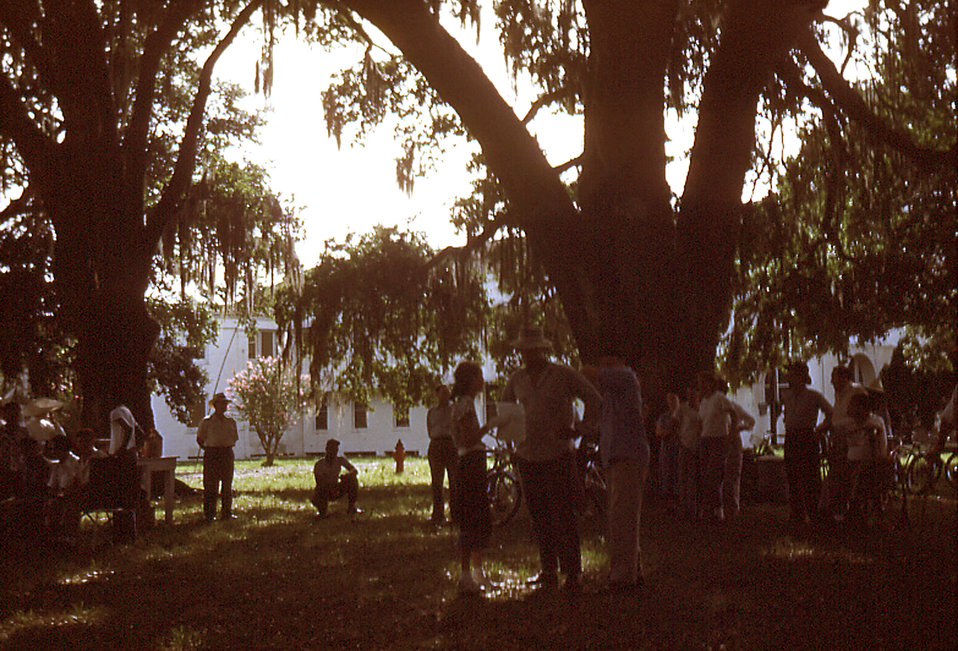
This historic image depicted a gathering of Carville, Louisiana Leprosarium patients, as they were enjoying an outing on Lake Johansen, which included a picnic under these large, very old shade trees. Such outdoor events were commonly attended, especially on Sundays. Lake Johansen was named after one of the Leprosarium's Chief Medical Ofiicers, Dr. Frederick A. Johansen.The National Hansen's Disease Museum's (NHDM) mission is to collect, preserve and interpret the medical and cultural artifacts of the Carville Historic District. In addition, we want to promote the understanding, identification, and treatment of Hansen's Disease (leprosy). We fulfill this mission by creating and maintaining museum displays, traveling exhibits, publications and a website in order to educate and inform the public on all levels.